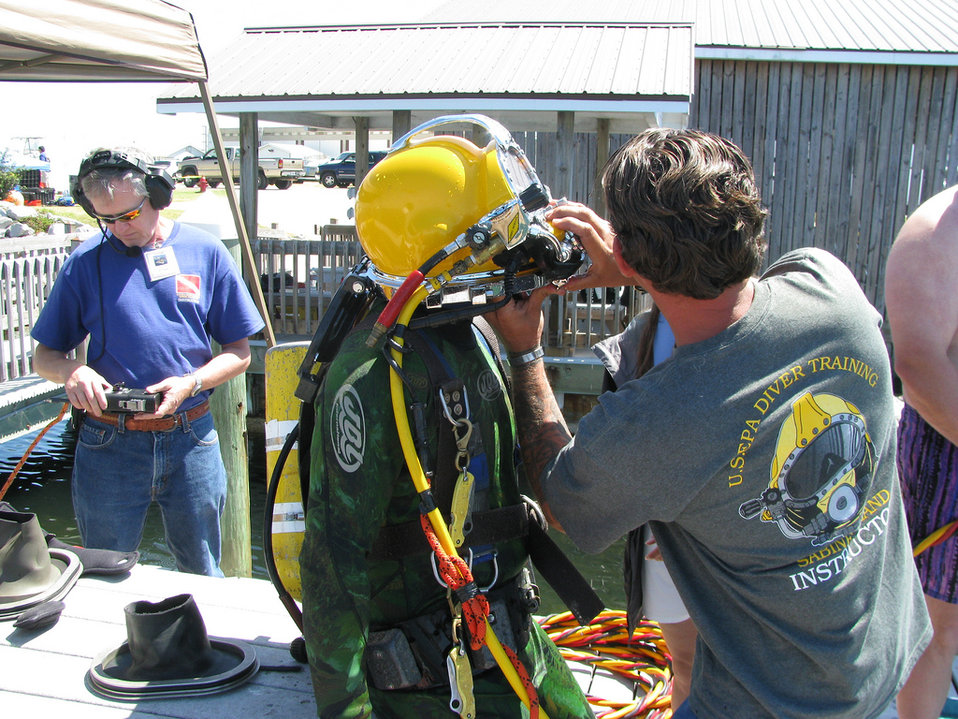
EPA dive students get familiar with surface supplied air

At this dive training in Gulf Breeze, Florida, divers learn basics of safety and rescue, as well as practice projects using the scientific method underwater in various diving modes including SCUBA, tethered SCUBA, and surface supplied air.